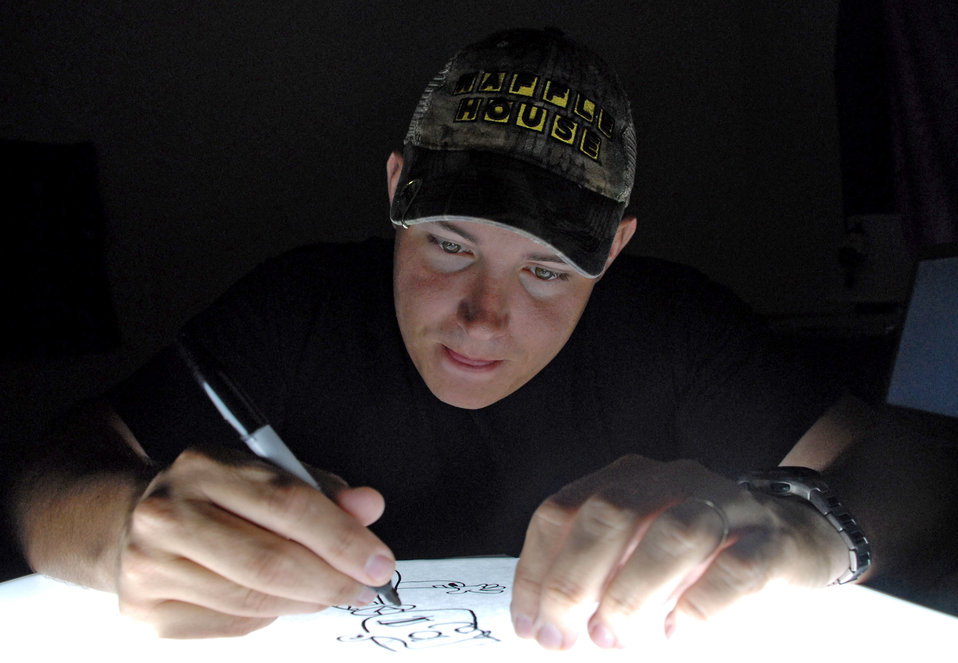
Air Force cartoonist publishes book while deployed

Staff Sgt. Austin M. May works on a character from his comic strip, Air Force Blues, Jan. 2 at Soto Cano Air Base, Honduras. Sergeant May recently published a book of his comics, and Air Force Blues is slated to appear in an upcoming issue of Airman Magazine. Sergeant May is a public affairs specialist deployed from Laughlin Air Force Base, Texas.